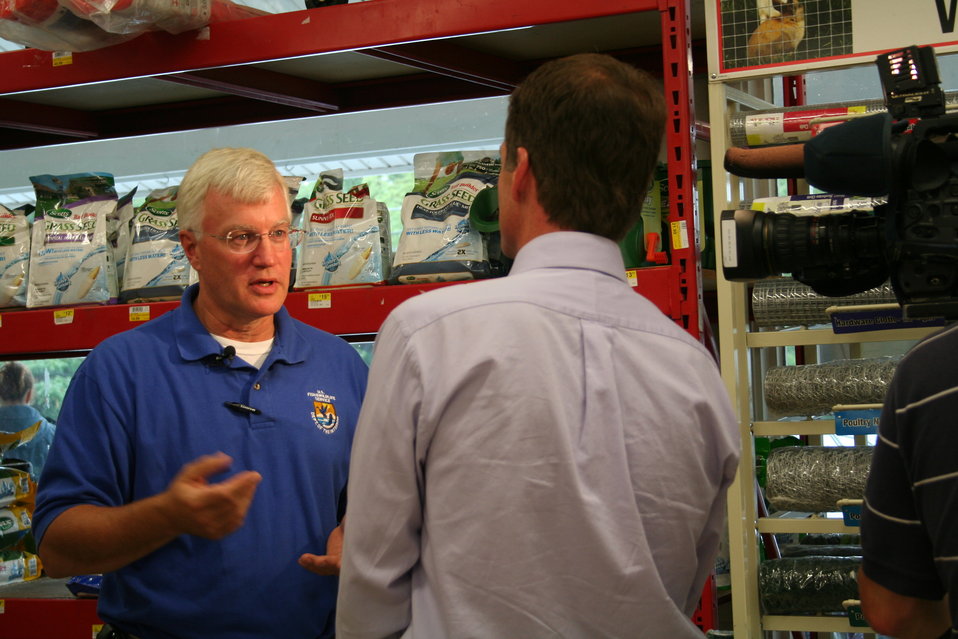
USFWS Dave Tilton discusses sea lamprey control with media.